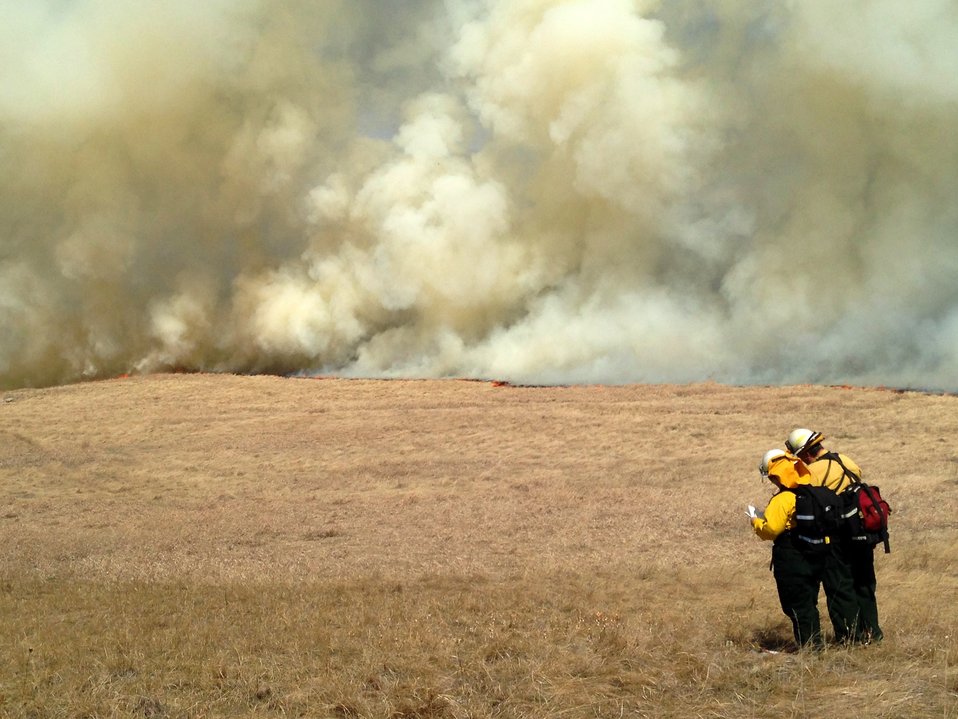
Monitoring the Weather

Weather is a key component to fire. During this prescribed burn on the Dewald Waterfowl Production Area of the Sand Lake Wetland Management District in South Dakota, two firefighters measure the relative humidity, dew point, temperature, wind speed and direction, and cloud cover. These measurements help to predict what fire behavior will be like. Weather conditions are assessed before a burn is considered through a spot weather forecast from a meteorologist, and then again on-site before a fire is lit. The goal of a prescribed burn is to improve habitat in as safe a manner as possible using fire as a tool. The weather is also monitored frequently throughout the burn.